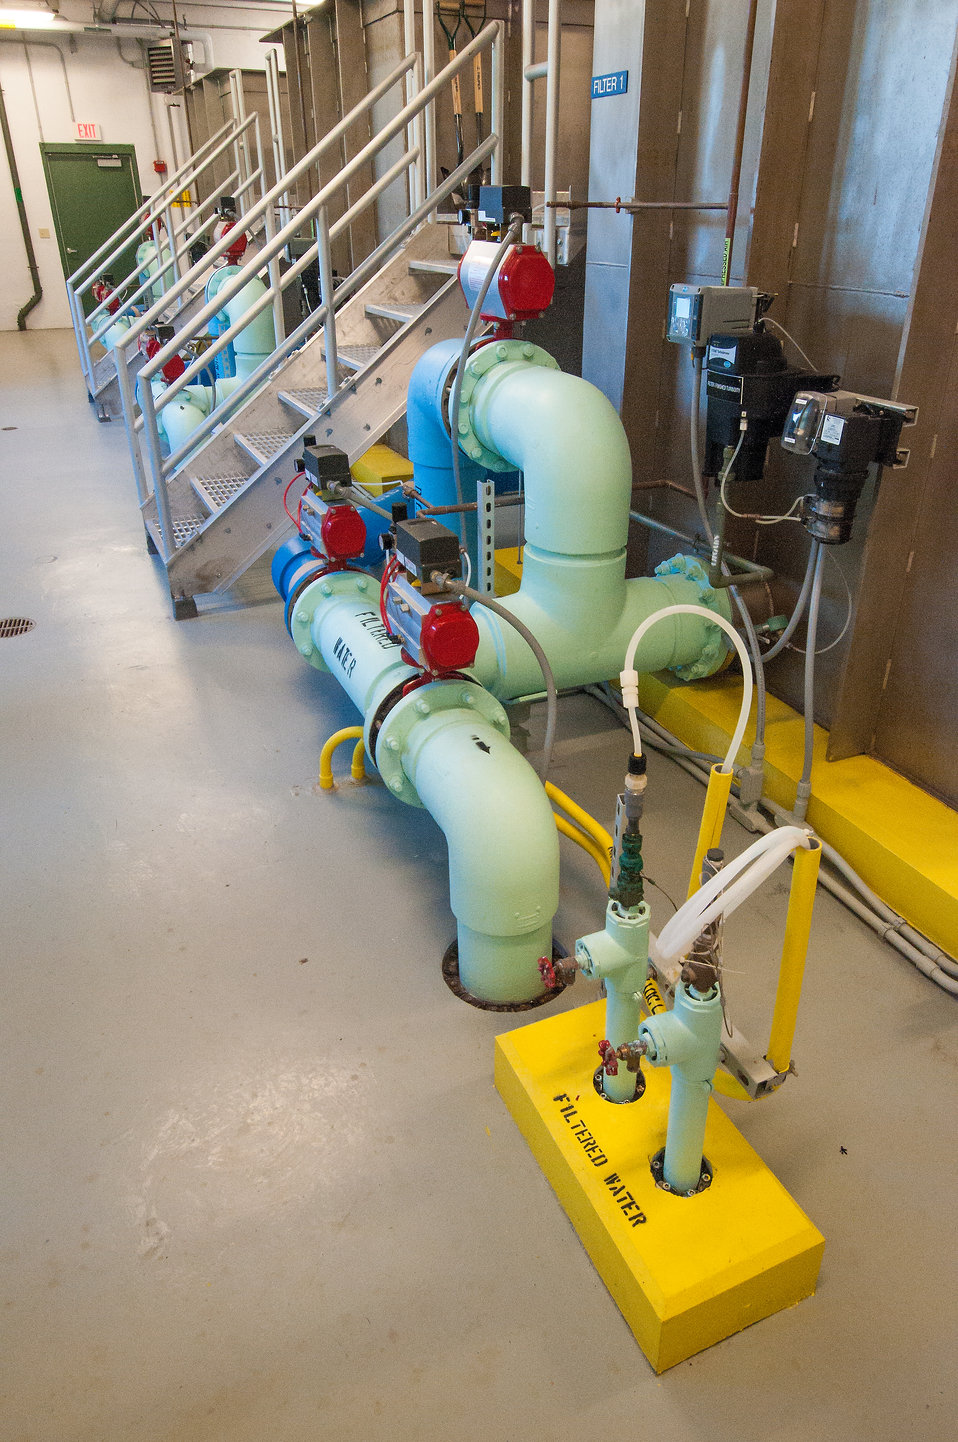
The Vergennes-Panton Water District along Lake Champlain in Vergennes, VT was able to upgrade the city’s water treatment plant with a Water and Environmental Programs (WEP) loan from the U.S. Department of Agriculture (USDA) Rural Development (RD).The upgrade included a complete process equipment replacement including new filter units, pumps, controls and piping on Sep. 18, 2013.